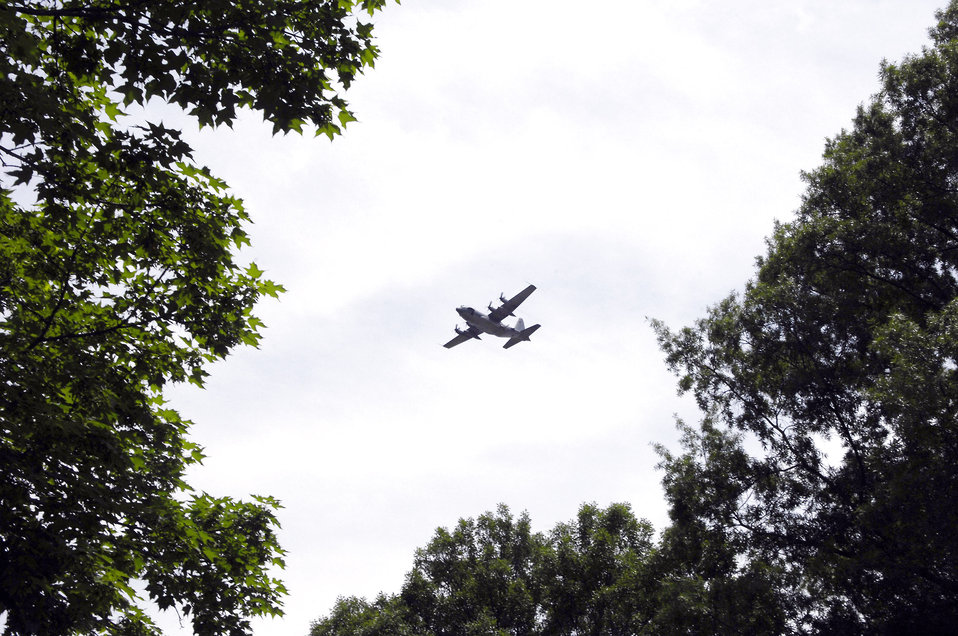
Airman laid to rest after 30 years

An AC-130H Spectre gunship from the 16th Special Operations Squadron conducts a flyover at Arlington National Cemetary during a memorial service for Senior Master Sgt. James Caniford May 28. Sergeant Caniford, a former 16th SOS illuminator operator, was recently identified after more than 30 years listed as missing in action from the Vietnam War.